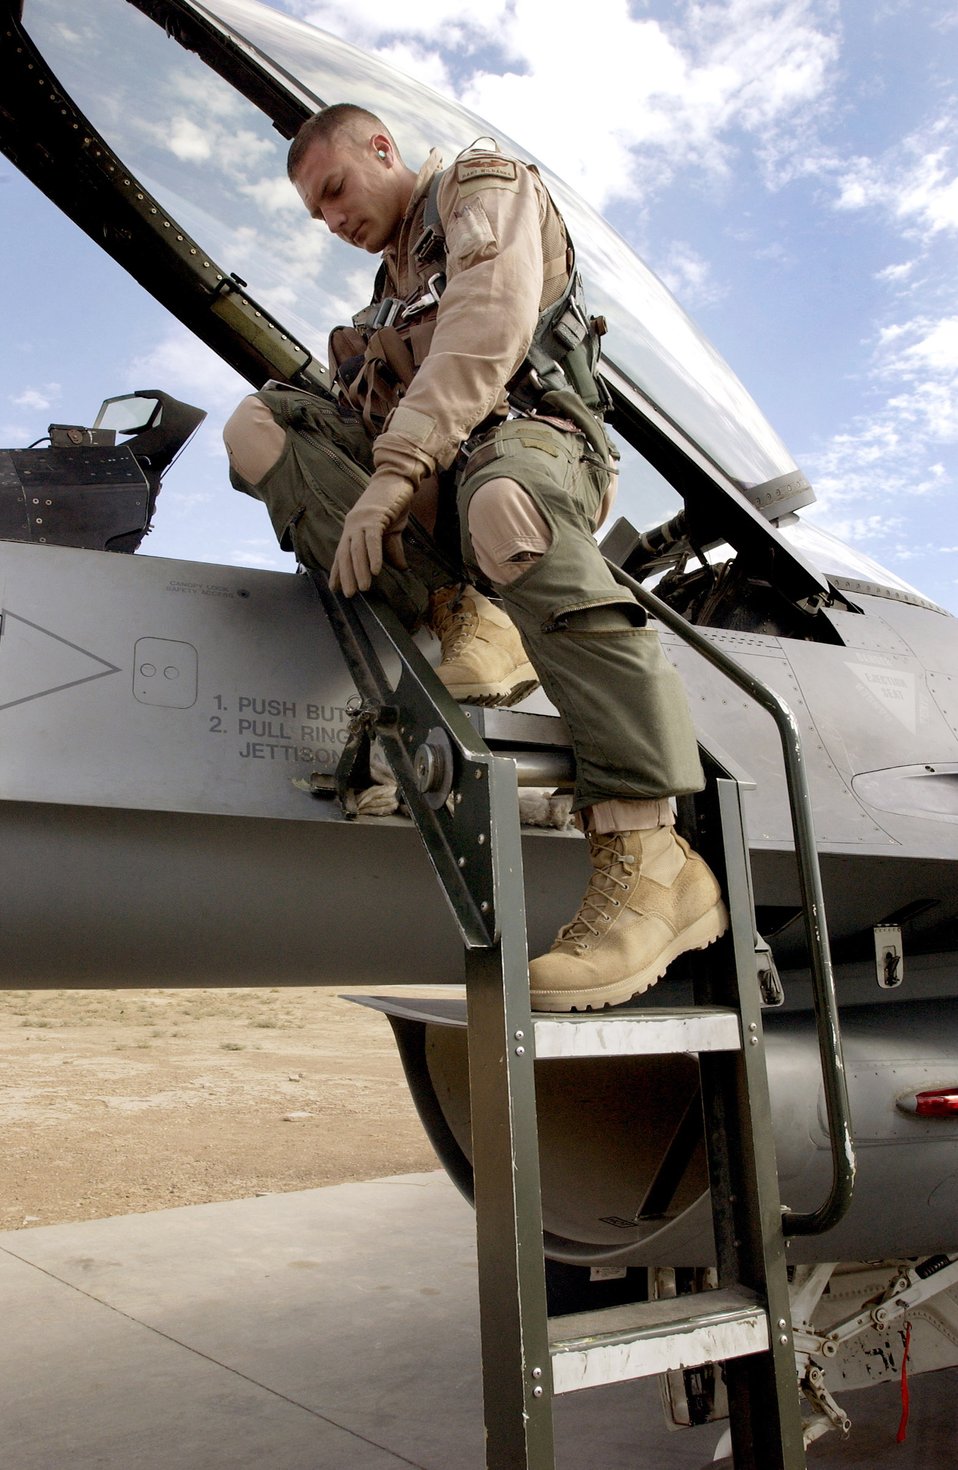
The beat goes on

BALAD AIR BASE, Iraq (AFPN) -- Capt. Bart Wilbanks climbs down from the cockpit of his F-16 Fighting Falcon after completing a successful close air-support mission over Mosul. Captain Wilbanks is from Waco, Texas, and deployed to this base from the 555th Fighter Squadron, Aviano Air Base, Italy.